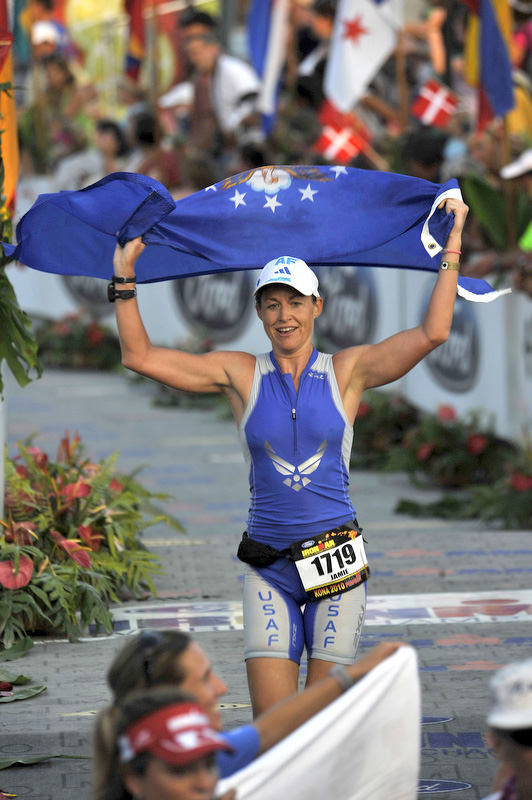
I'm still standing, I'm Ironman

Capt. Jamie Turner crosses the finish line waving the Air Force flag at the Ironman World Championship Oct. 9, 2010 at Kona, Hawaii. The competitors must complete a 2.4 mile-swim, followed by a 112-mile bike race and finish with a 26-mile marathon all in one day. Captain Turner, who is a C-17 Globemaster III pilot at Joint Base Charleston, S.C., finished first in the military female division.